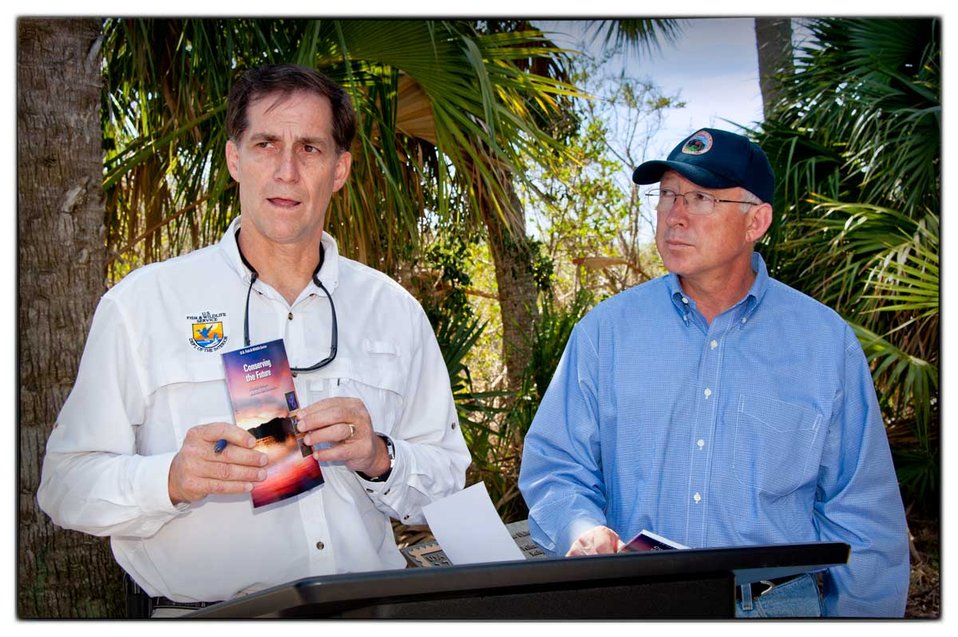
Director Dan Ashe and Secretary Salazar talk about the 10 year Refuge System blueprint

Secretary of the Interior Ken Salazar and U.S. Fish and Wildlife Service Director Dan Ashe at Pelican Island National Wildlife Refuge with the Conserving the Future: Wildlife Refuges and the Next Generation document, which articulates a 10-year blueprint for the Refuge System.